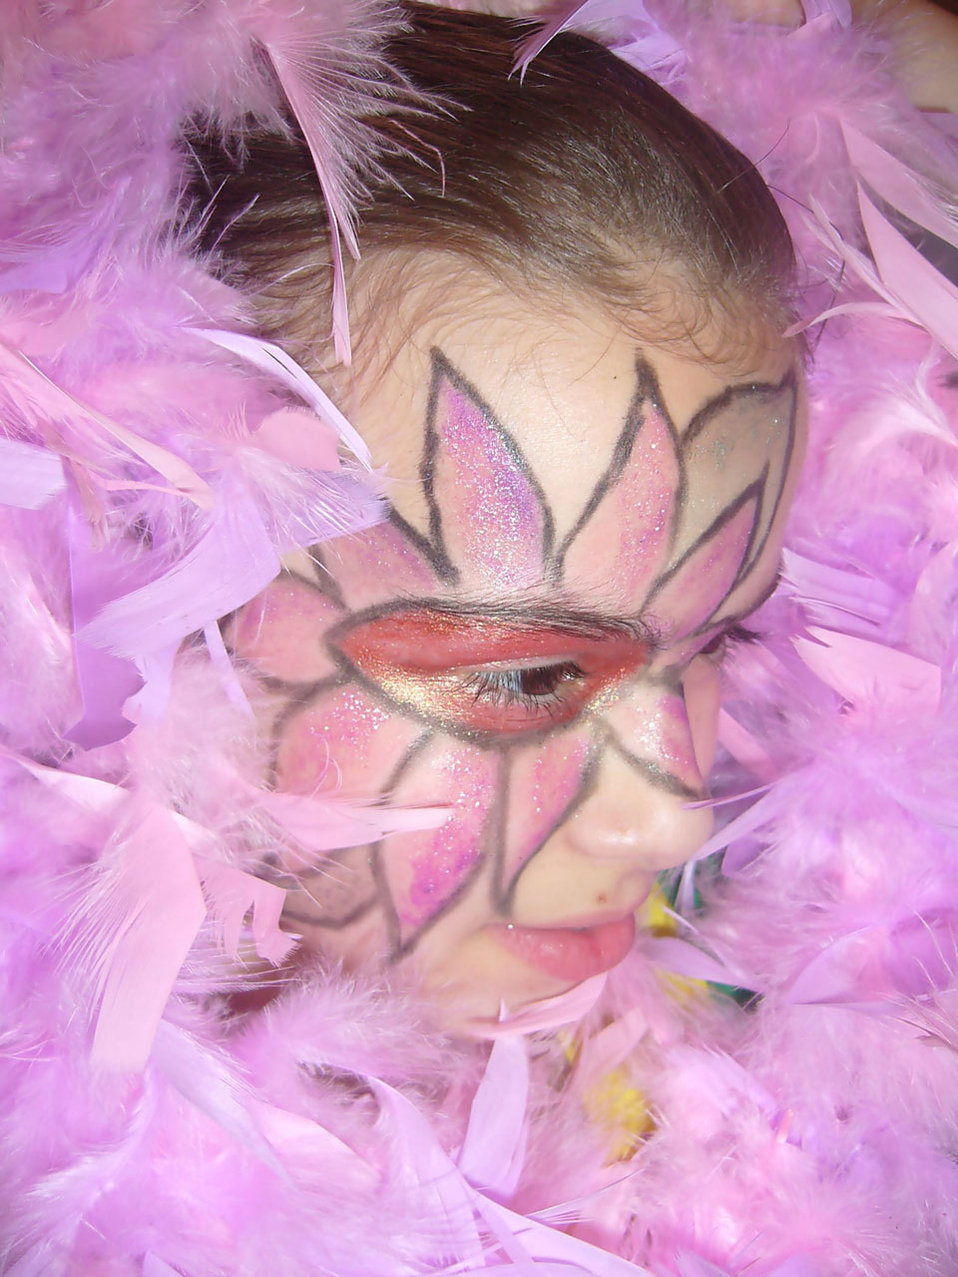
Face painting.